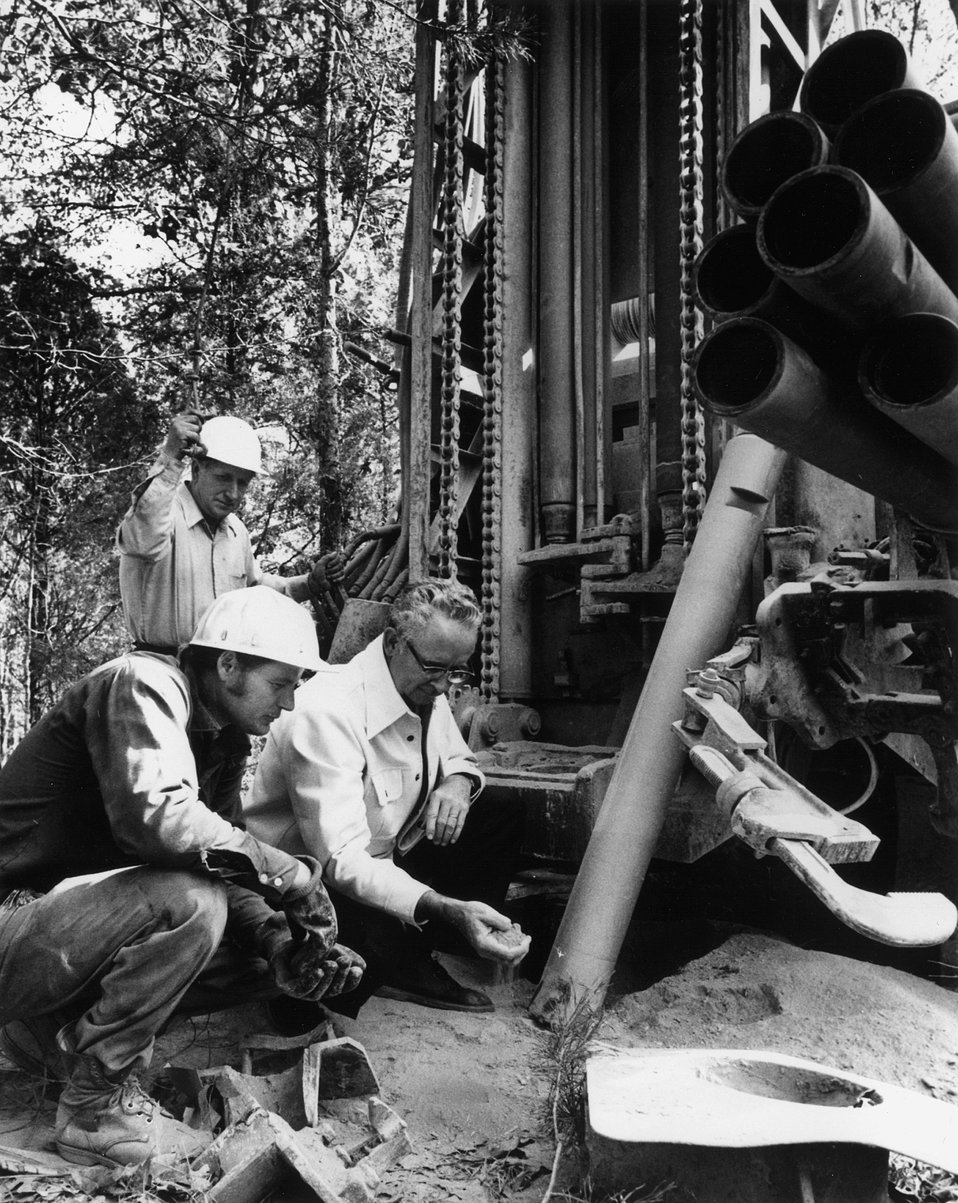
Exploratory core drilling operations to find a suitable location for studying the effect of heat on shale rock are being conducted on the Energy Research and Development Administration's reservation in Oak Ridge, Tennessee as part of a geological study related to ERDA's national program for safe terminal storage of commercial high level nuclear waste. c. 1977